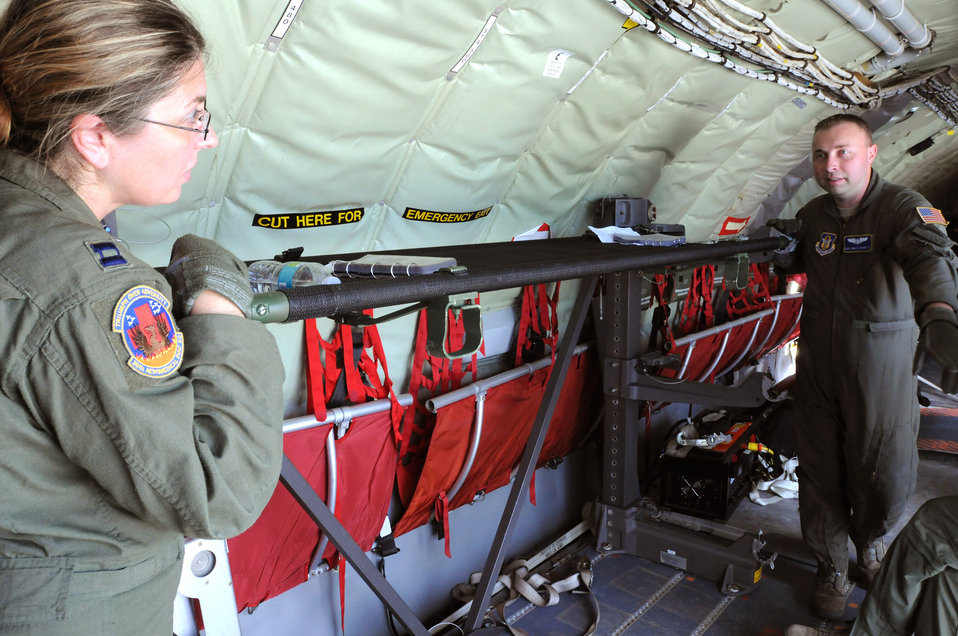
Total force aeromedical evacuation technicians gain unique training

Staff Sgt. Carl Stewart II (right) explains to how to construct a patient support pallet to Capt. Constance Mackus June 26, 2010 onboard a KC-135R Stratotanker in Melbourne, Fla. PSPs are used aboard aircraft like the KC-135R, the C-17 Globemaster III and the C-130 Hercules to allow aeromedical evacuation specialists to administer care to patients during flight. Sergeant Stewart and Capt. Mackus joined other Airmen from the 36th Aeromedical Evacuation Squadron and the 43rd AES in a three-day total force aeromedical evacuation training mission here. Sergeant Stewart II is assigned to the 459th AES and Captain Mackus is assigned to the 36th AES.